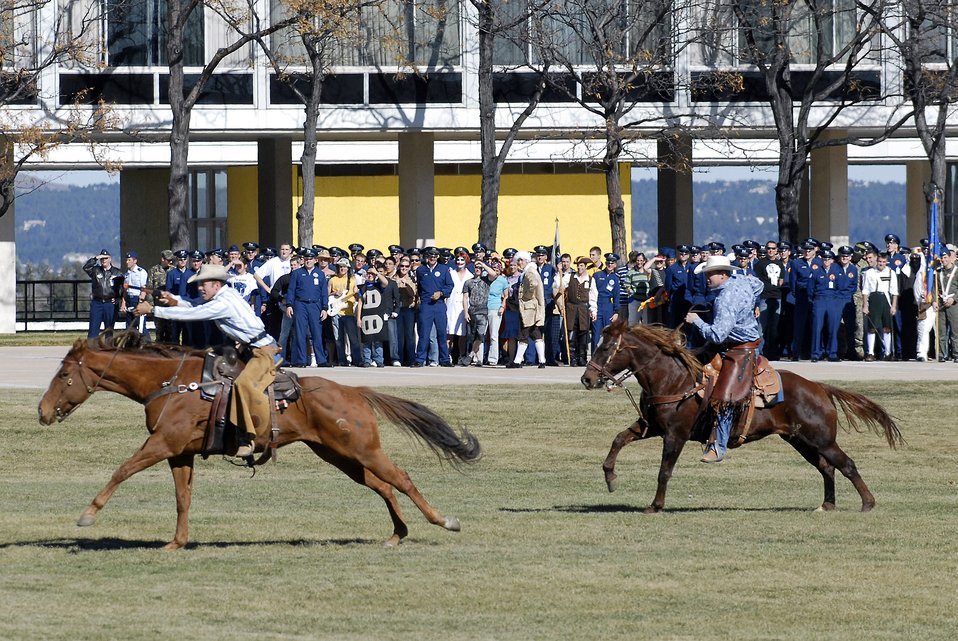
Cowboys give chase after one of their horses was stolen on the terrazzo Oct 29.